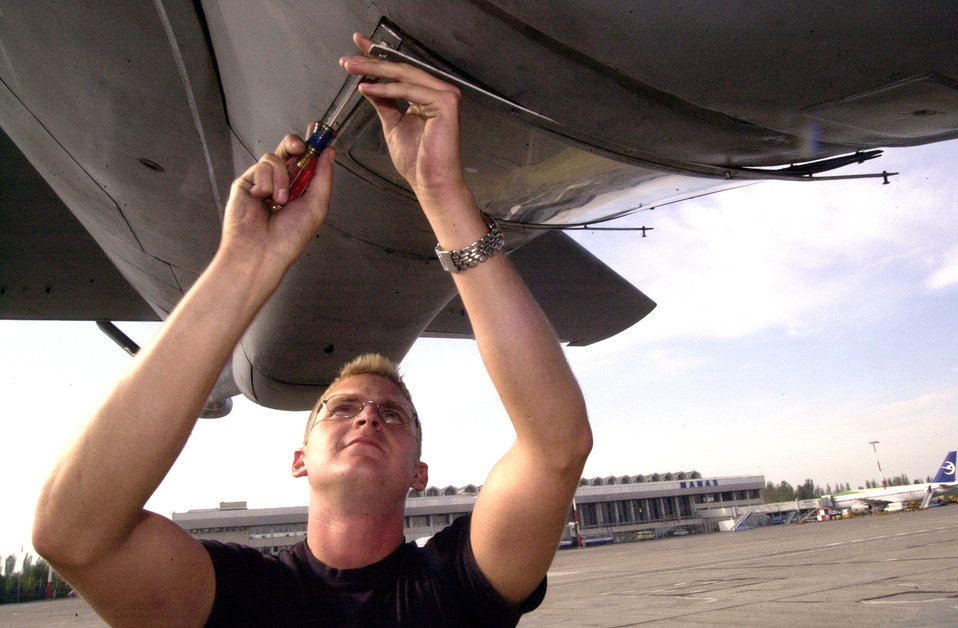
Nagle

GANCI AIR BASE, Kyrgyzstan -- Airman Jeffrey Nagle reinstalls a boom sighting window on a KC-135 Stratotanker here. Nagle and his fellow crew chiefs and maintenance specialists kept the tanker fleet here at 100-percent mission capable for 17 consecutive days Aug. 25 through Sept. 10.